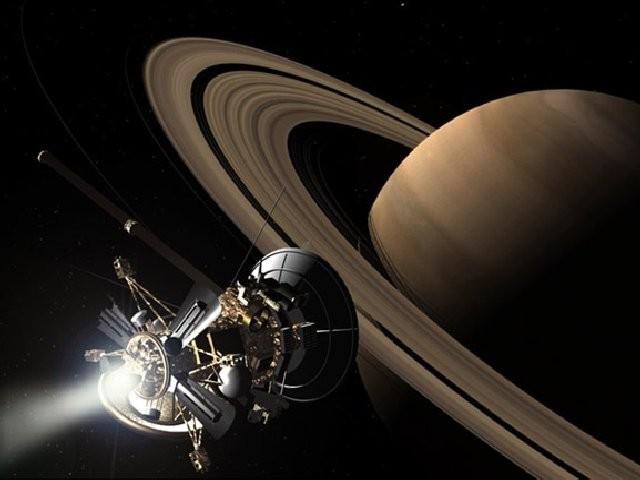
ARTIST'S DEPICTION OF NASA'S CASSINI-HUYGENA APPROACHING THE PLANET SATURN.

THE ARRIVAL OF NASA'S CASSINI-HUYGENA SPACECRAFT AT THE PLANET SATURN ON JULY 1, 2004, FOLLOWING A SEVEN YEAR JOURNEY WAS MADE POSSIBLE PARTLY BY WORK DONE AT DOE SITES. CASSINI HAS TRAVELED MORE THAN TWO BILLION MILES SINCE IT WAS LAUNCHED IN 1997 AND IS NOW ON A FOUR YEAR LONG ORBIT AS A SATELLITE OF SATURN. CASSINI IS POWERED BY PLUTONIUM 238 PRODUCED AT THE SAVANNAH RIVER SITE AND OAK RIDGE NATIONAL LABORATORY DEVELOPED AND FABRICATED THE PROTECTIVE CLADDING, IRIDIUM ALLOY CLAD VENT SETS TO ENCAPSULATE THE FUEL.